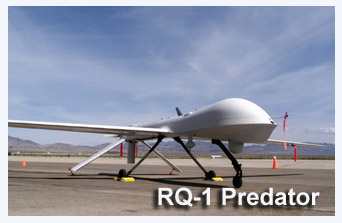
RQ-1 Predator

The RQ-Predator is a hunter/killer unmanned aircraft system.